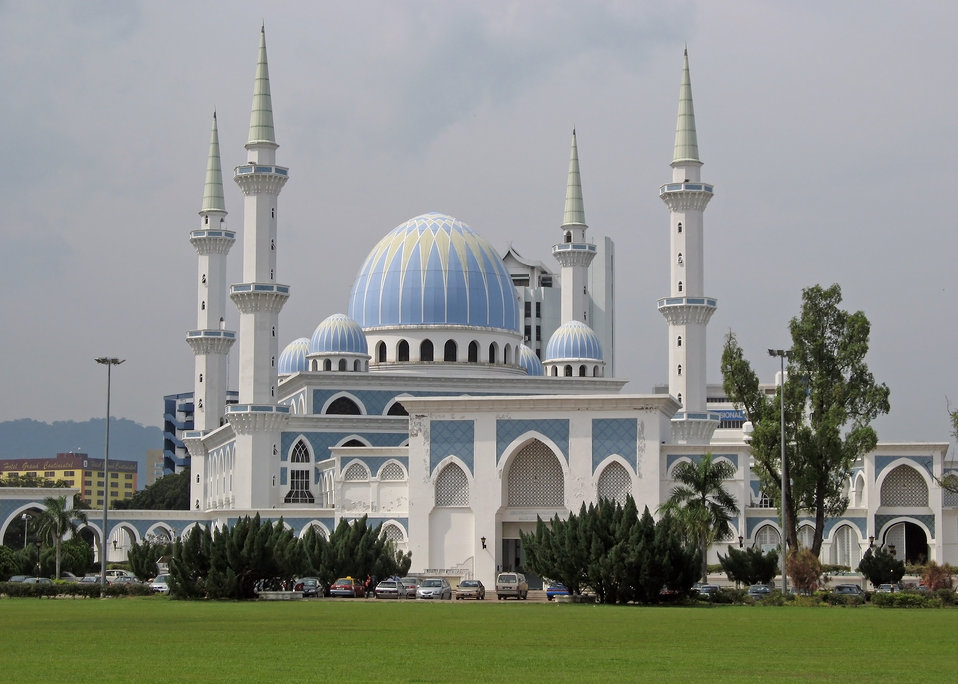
Sultan Ahmad I Mosque, Kuantan, Pahang, Malaysia. Also the State Mosque of Pahang.